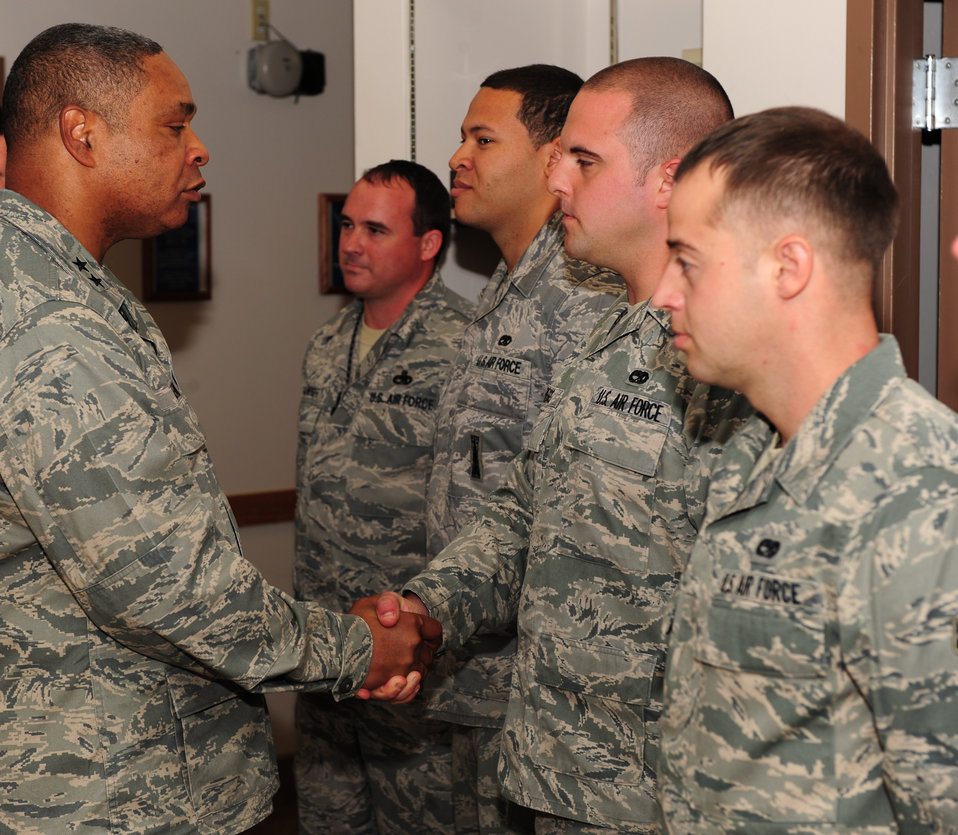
Last Alert

Major Gen Garry C. Dean commander, 1st Air Force commander, congratulates Airmen with the 20th Fighter Wing Alert Facility May 6, 2011 at Shaw Air Force Base, S.C. after they handed the air sovereignty alert mission to the 169th Fighter Wing at McEntire Joint National Guard Base, S.C. Shaw's 20th Fighter Wing alert facility has guarded the East Coast since Sept 11, 2001 through Nov 15, 2003, and Aug 1, 2006 through May 6, 2011